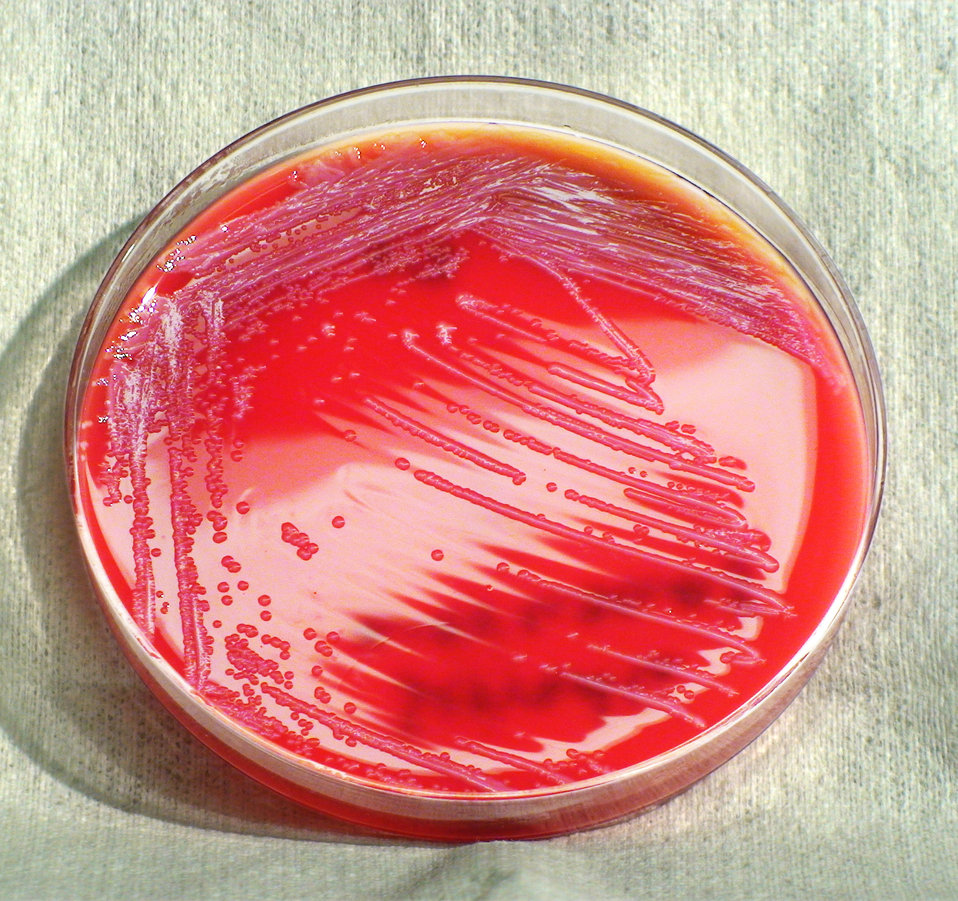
This photograph depicts the colonial morphology displayed by Gram-negative Serratia marcescens bacteria, which was grown on a medium of sheep's blood agar (SBA), for a 24 hour time period, at a temperature of 37�C.